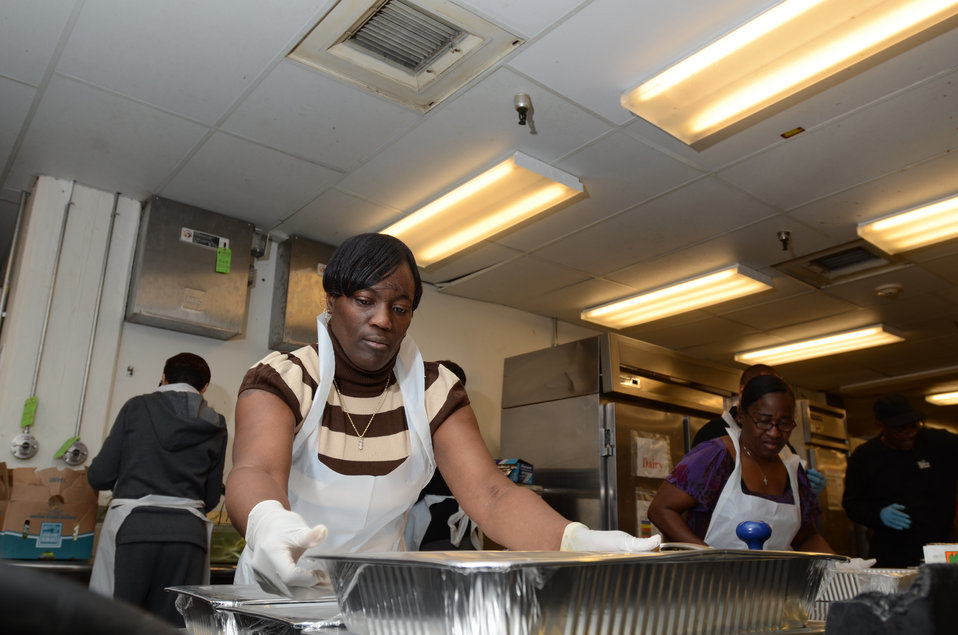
Pauline McBride, Rural Development helps prepare the evening meal at the D.C. Central Kitchen during USDA’s National Service Day on January 12, 2012. NSD honors Dr. Martin Luther Kings’s contributions to the Civil Rights Movement. The D.C. Central Kitchen turns leftover food into millions of meals for thousands of at-risk individuals while offering nationally recognized culinary job training to once homeless and hungry adults.